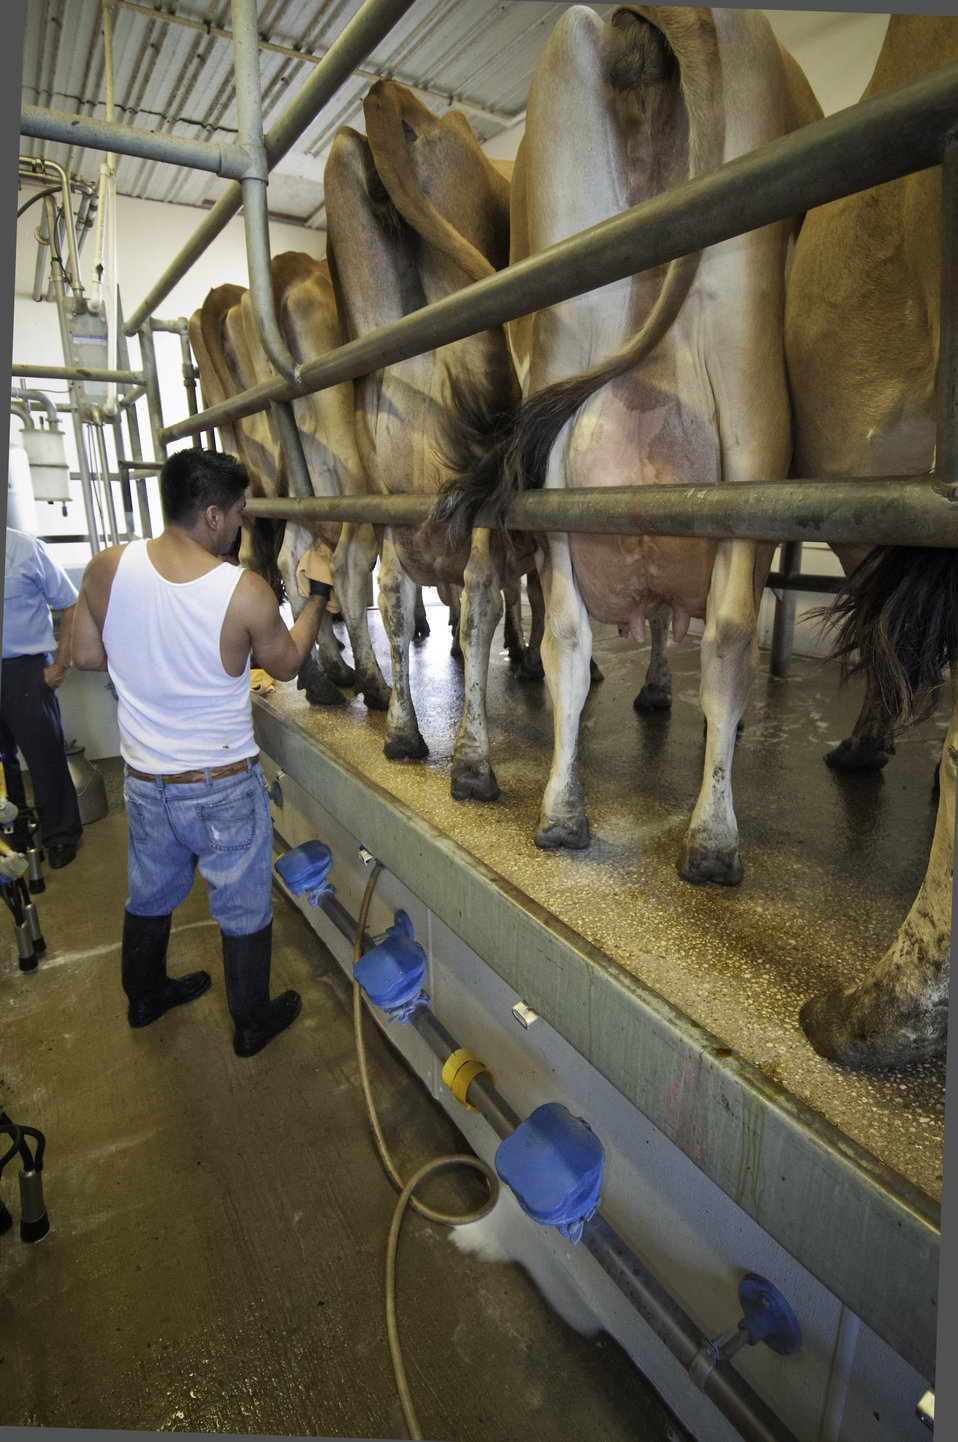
Chapel Country Creamery dairy produces artisan cheeses in Easton, MD starts with fresh raw milk produced on the family's Grade A dairy farm. The dairy herd consists of grass fed Jersey and Holstein cows that produce high quality milk, rich in cream. The milk is all-natural and contains no synthetic hormones, antibiotics, or chemical compounds. The diary produces its own cheese from start to finish, which insures the highest quality possible. They use only vegetable rennet and all natural ingredients in their cheese. The Jersey and Holstein cows graze on clover and rye grass on 45 acres of pasture. The cows are rotated among 32 different pastures to insure that the cows are eating the freshest and most nutritious part of the grass thus providing the highest quality of raw milk that is rich in cream. The dairy received the Talbot County, MD Soil Conservation Award for environmental friendly operations for soil, air and water quality concerns.